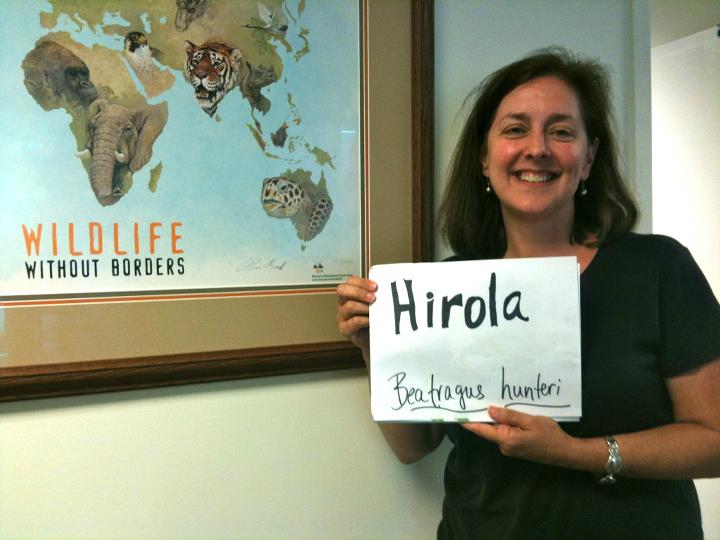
Megan Hill, 'Hirola,'

International Affairs participates in FFI's In Our Hands campaign